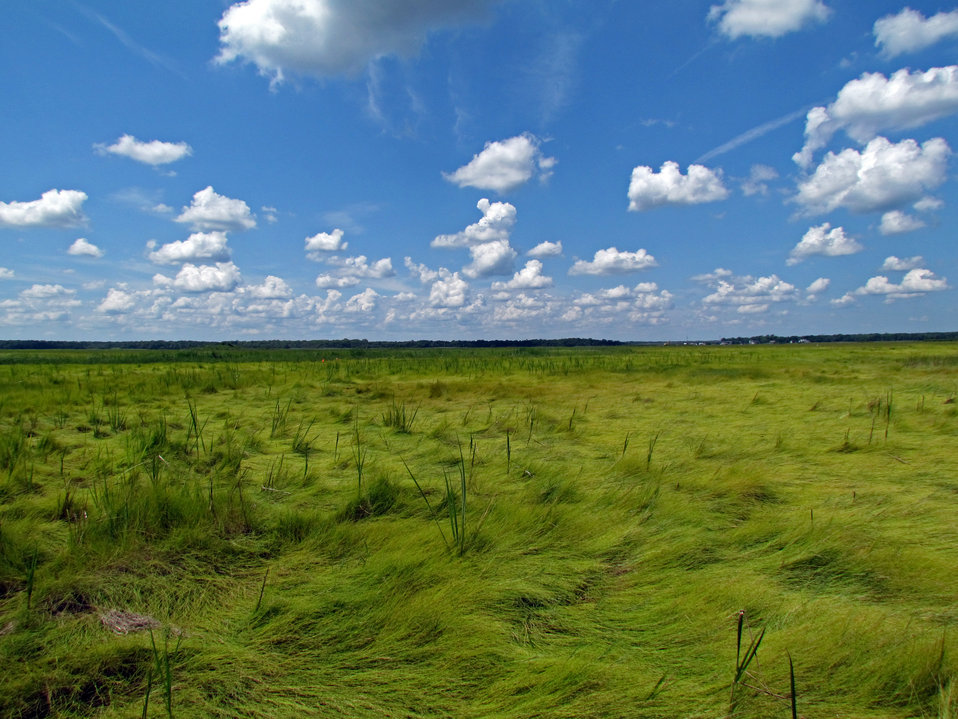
Wilderness area on Mullica River

Edwin B. Forsythe National Wildlife Refuge, NJ.